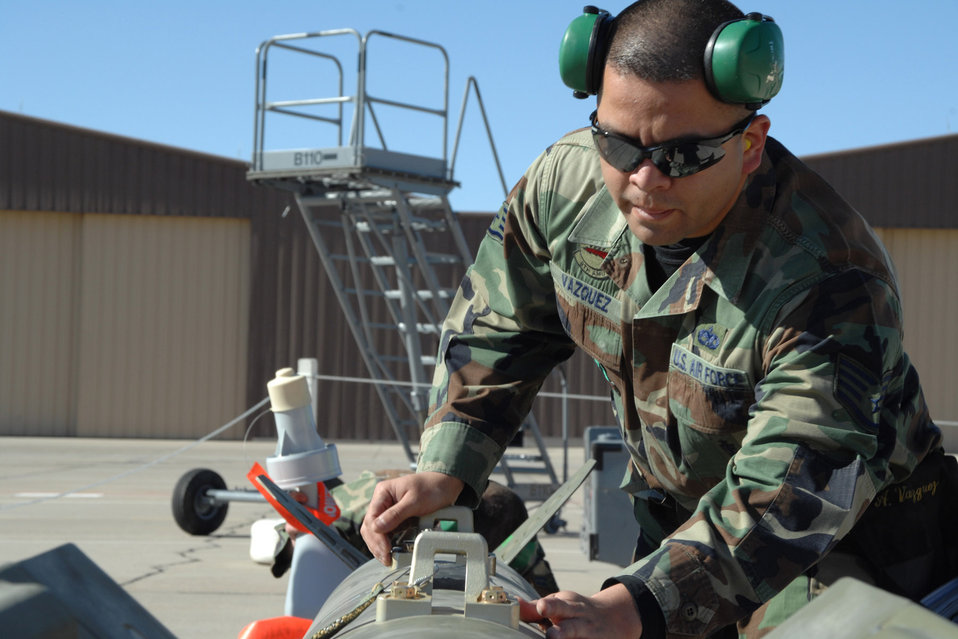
Holloman weapon loaders compete for last time on F-117

Staff Sgt. Alberto Vazquez preps a guided bomb unit-27 during the F-117 NIghthawk Weapons Load Crew of the Year Competition Jan. 18 at Holloman Air Force Base, N.M. This is the last competition as Holloman AFB is scheduled to retire the F-117 receive the F-22 Raptor. Sergeant Vazquez is assigned to the 49th Aircraft Maintenance Squadron.